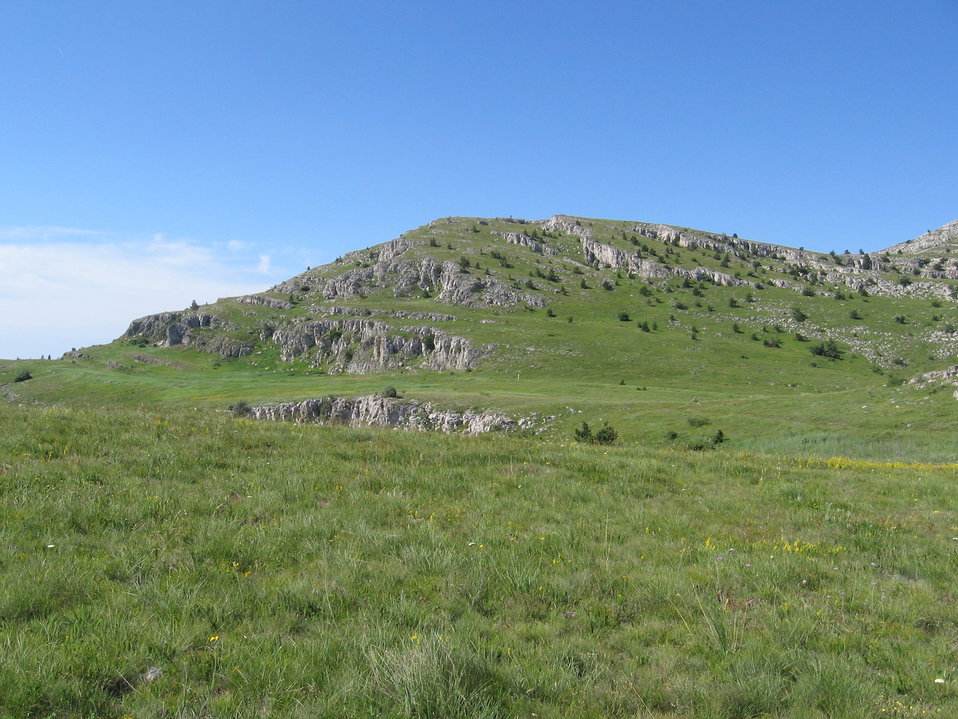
Українська: Бабуган